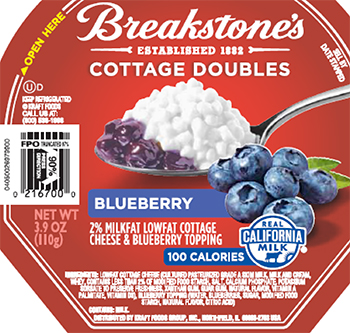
RECALLED – Cottage Cheese products

May 17, 2014 – Product Recall – Kraft Foods Group Voluntarily Recalls Select Cottage Cheese Products Due to Out-of-Standard Storage Temperatures
Certain Knudsen Cottage Cheese, Breakstone’s Cottage Cheese, Simply Kraft Cottage Cheese and Daily Chef Cottage Cheese Products Included in the Recall
.